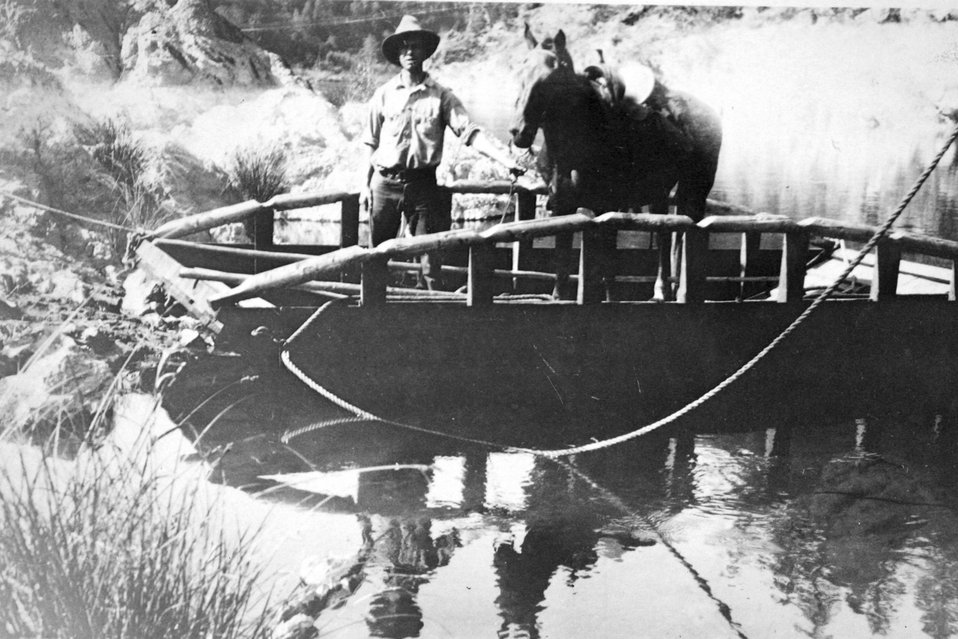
Loran J. Cooper and his saddle hosre en route from Horseshoe Bend on the Rogue River to Bear Camp. The ferry was built in 1924 and was washed out to sea by the 1927 flood. C. 1924 to 1927